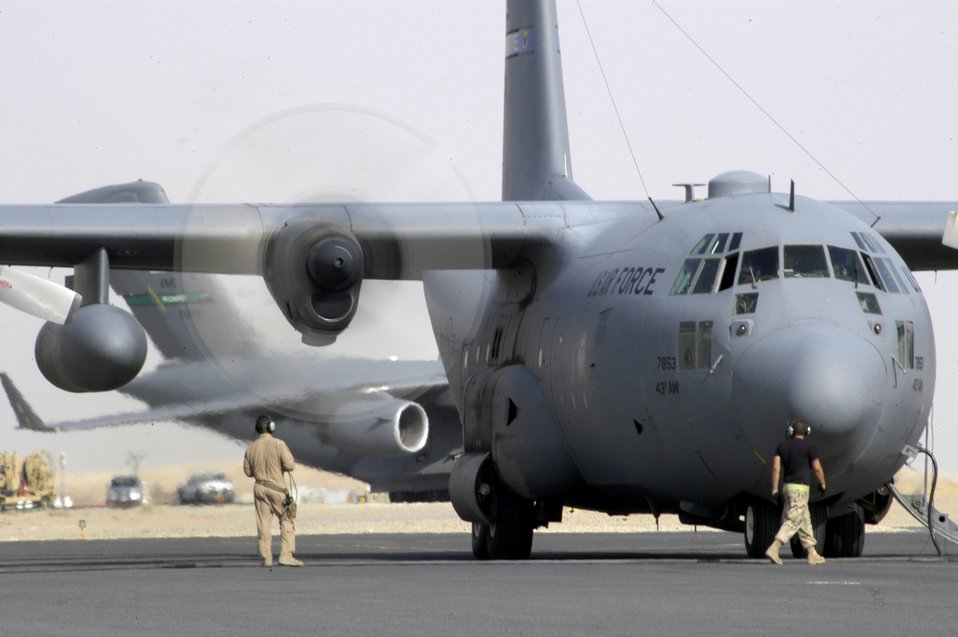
Mighty Hercules

Aircrew and maintainers go over final pre-flight checks on a C-130 Hercules before a mission at a deployed location in Southwest Asia on Tuesday, June 20. The Airmen are with the 386th Air Expeditionary Wing.